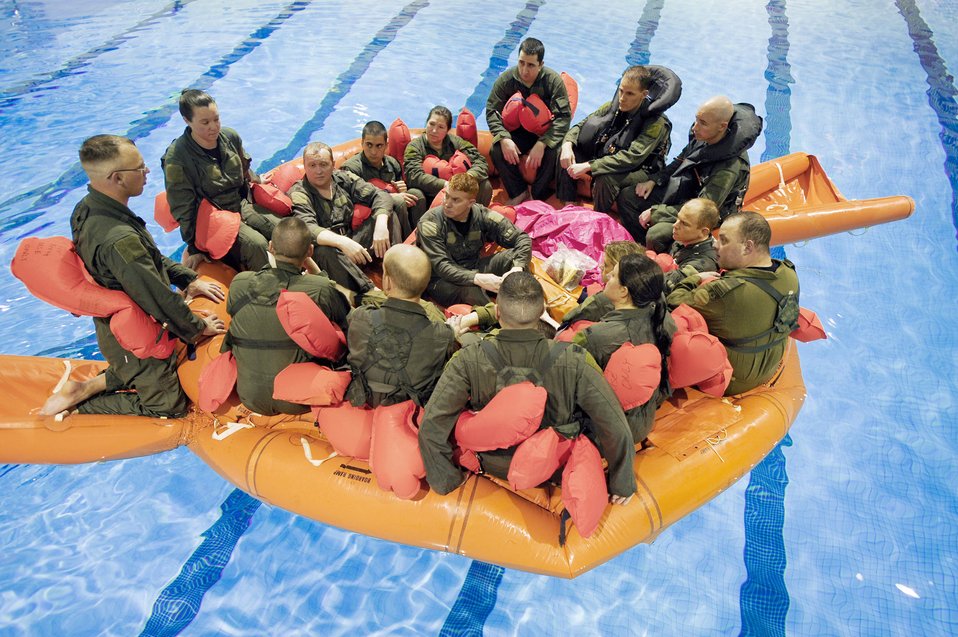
Get ready to swim

Staff Sgt. Reid Beveridge (far left), a survival, evasion, resistance and escape specialist, teaches aircrew members water survival at the base pool at Elmendorf Air Force Base, Alaska, April 29, 2009. The course helps prepare crew members who might be in an aircraft accident over open waters.